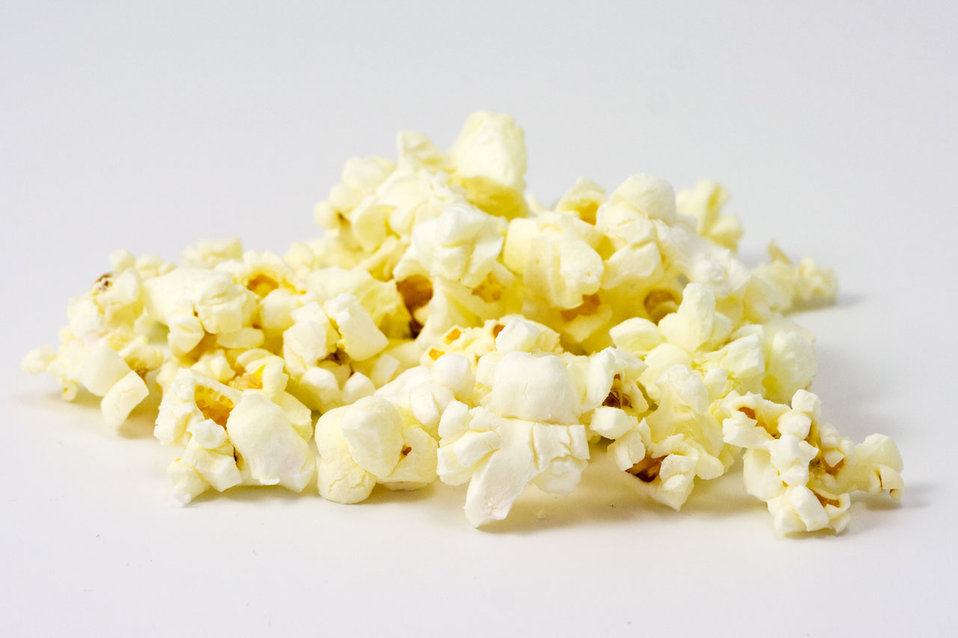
Popcorn

A pile of popcorn.